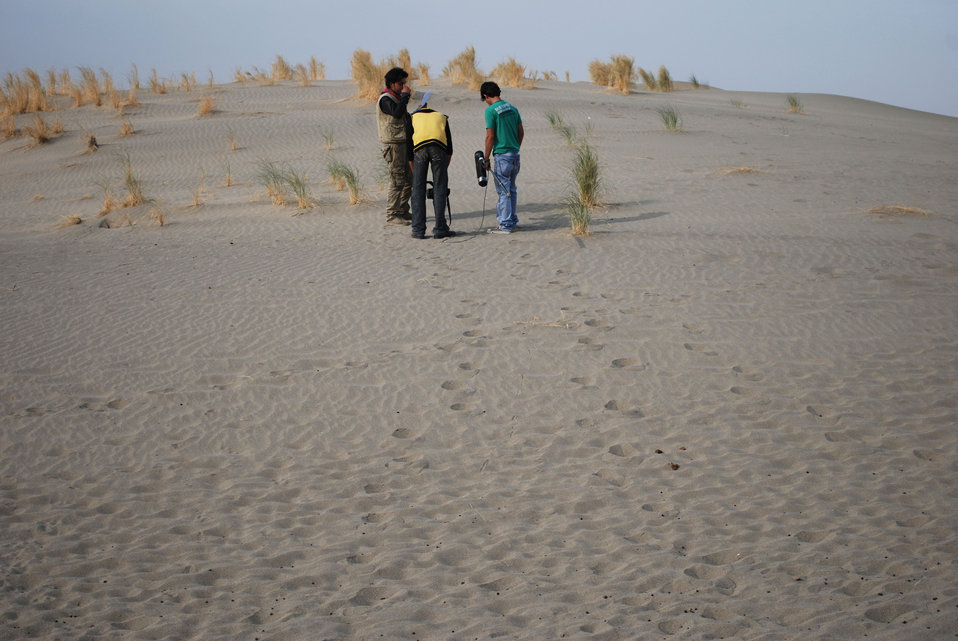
'On the Road' in Balkh Province